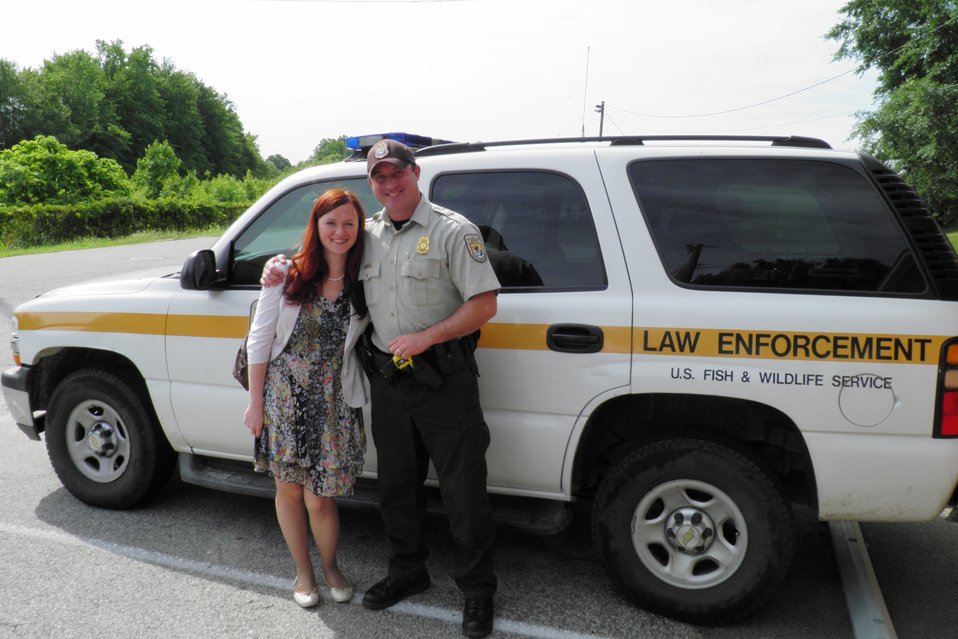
Occoquan Exchange

Sharing best practices for law enforcement at Occoquan National Wildlife Refuge.